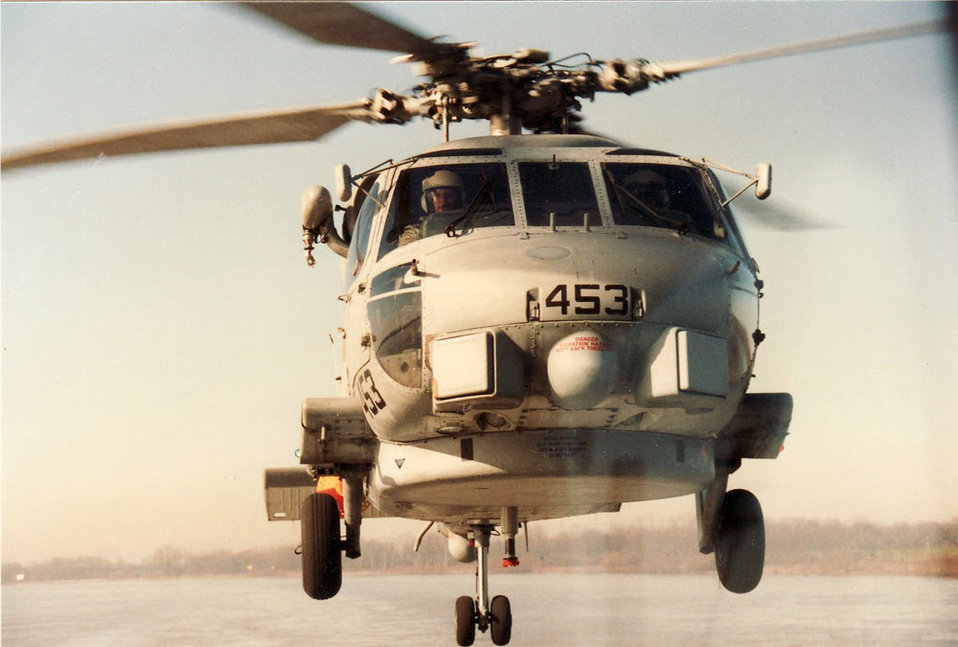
Dan Rolince-Northeast Region

Dan Rolince served on active duty in the U.S. Navy for eight and a half years, retiring in 2009 after 20 years of service with reserve duty. He was commissioned through the Naval Reserve Officers Training Corps (NROTC) and was a helicopter pilot stationed in Mayport, Fla., and Pt. Mugu, Calif. His father was in the Navy as a Seabee (Construction Battalion) during World War II in the South Pacific. Dan's son, currently enrolled in the NROTC program, will continue the tradition of naval service.
During active duty, Dan was deployed to the Mediterranean Sea, the North Red Sea in support of the first Gulf War and the Caribbean in support of drug operations. His most memorable experiences in naval service involve supporting the National Science Foundation in Antarctica, to which he was deployed twice.
Dan joined the U.S. Fish and Wildlife Service in 2004. He served as a special agent in the Richmond, Va., Office of Law Enforcement (OLE) for six years before being selected as the Resident Agent-in-Charge for the Region 5 OLE Southern District. His area of responsibility encompasses West Virginia, Virginia, Washington, D.C., Maryland and Delaware. This includes nine offices, eight agents, four Wildlife Inspectors and three support employees.